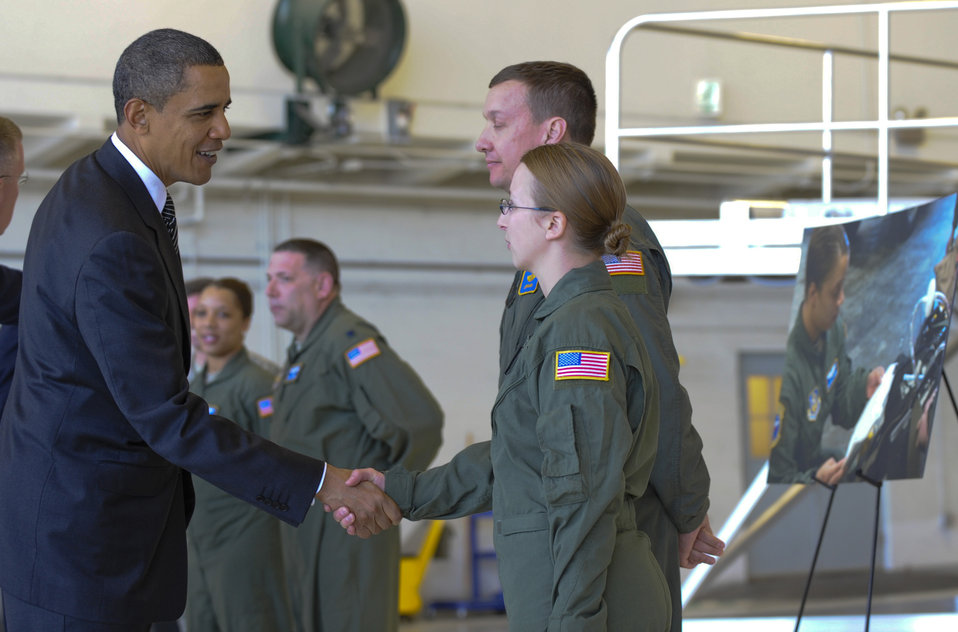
CCATT

President Barack Obama shakes the hand of Senior Airman Brooke Lohr Jan. 28, 2010, at MacDill Air Force Base, Fla. President Obama and Vice President Joe Biden briefly met with Airmen providing aeromedical evacuation support to victims of the recent earthquake in Port-au-Prince, Haiti. Airman Lohr is a cardiopulmonary technician deployed from the 88th Medical Group at Wright-Patterson AFB, Ohio. She and fellow critical care air transport team member, Capt. Jeffery Marsh (second from right), were among the Airmen thanked by the president for their direct support to Operation Unified Response.